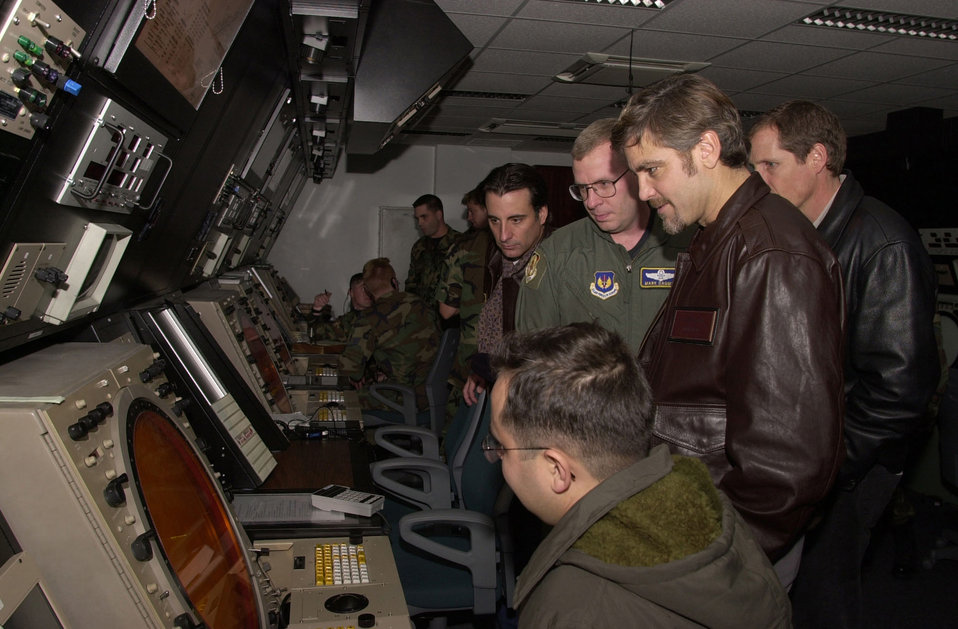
Star Struck

INCIRLIK AIR BASE, Turkey -- George Clooney (center) and Andy Garcia (far left) tour the 39th Operations Support Squadron’s radar approach control center at Incirlik on Dec. 7. Clooney, Julia Roberts, Matt Damon, Andy Garcia, and Brad Pitt, accompanied by producer Jerry Weintraub, and other Warner Bros. representatives, left Los Angeles for Turkey immediately following the U.S. premiere of their new movie Ocean’s 11. Considering the aftermath of the Sept. 11 terrorist attacks in New York and at the Pentagon, Weintraub contacted Armed Forces Entertainment and the United Services Organization and expressed his interest in bringing the cast to an overseas military base.